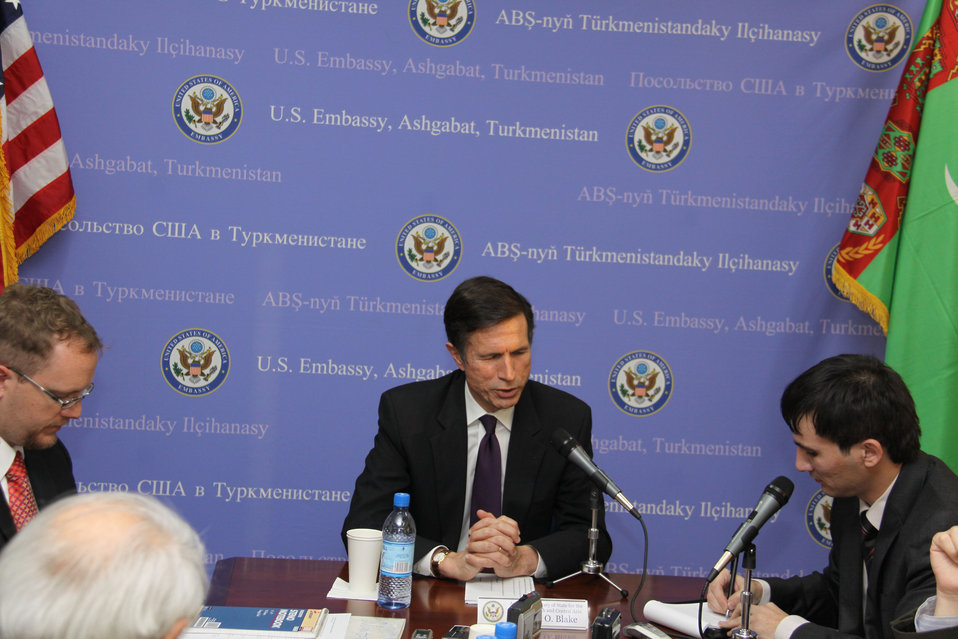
Assistant Secretary Blake Holds a Press Conference

Assistant Secretary of State for South and Central Asian Affairs Robert O. Blake holds a press conference following the U.S.-Turkmenistan Business Council at the U.S. Embassy Ashgabat, Turkmenistan, on February 16, 2011.